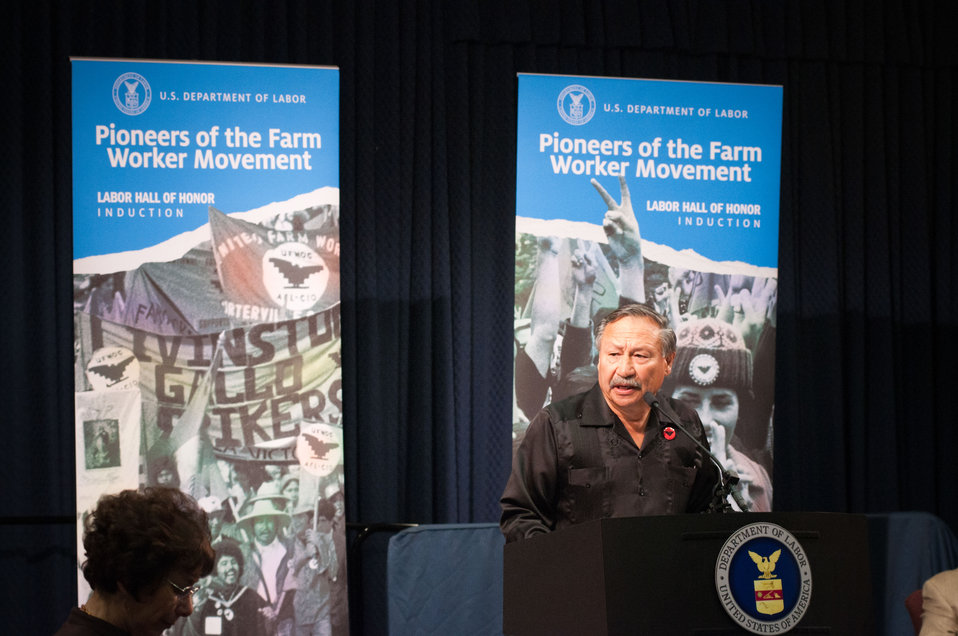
Arturo Rodriguez, President, United Farm Workers of America spoke of the diligence, dedication and effort by Cesar Chavez, a Mexican-American labor leader who used non-violent methods to fight for the rights of migrant farm workers in the southwestern United States during the dedication of the Cesar E. Chavez Memorial Auditorium at the United States Department of Labor in Washington, D.C., Monday, March 26, 2012. Chavez founded the Cesar Chavez Foundation, a group that advocates for the rights of farm workers, acting to increase wages and improve the working conditions and safety of farm workers.